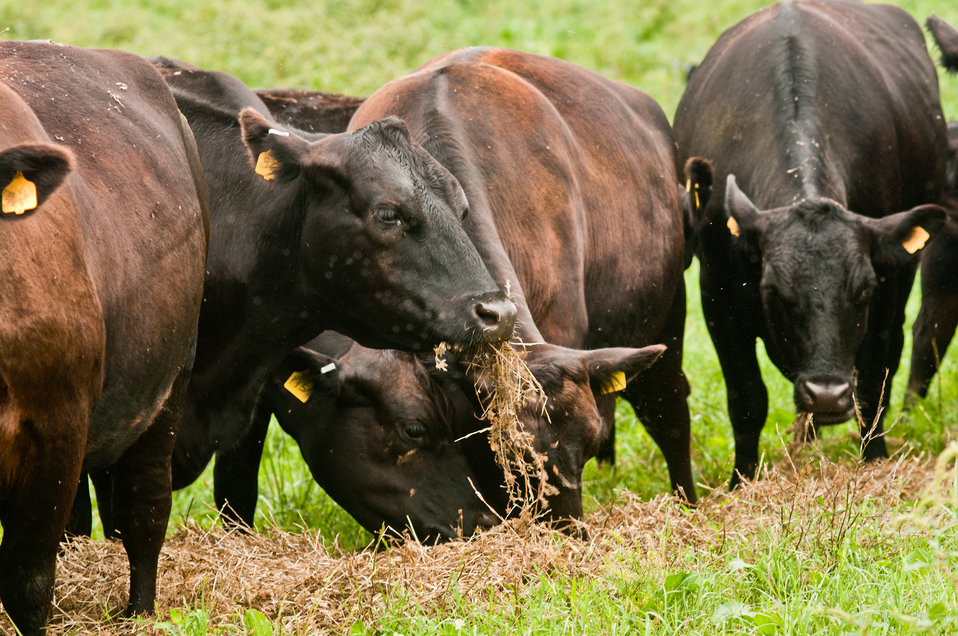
Black Angus cows and calves graze organic pastures, and for added nutrition and variety, they enjoy a daily feeding of sweet silage at Nick’s Organic Farm, owned by Nick Maravell, in Adamstown, MD on Friday, July 12, 2013. The white plastic wrapped bales of pasture grass and alfalfa have been fermenting for months to create sweet silage that stores well and can be used to feed cattle at varying amount all year long. The fermentation process sweetens the taste and increases the vitamin levels. The farm produces Black Angus beef, chicken, turkey, eggs, hay, soybeans, corn, alfalfa, orchard grass, rye; and other crops. The cattle are 100% grass-fed receiving certified organic pasture, certified organic hay (in winter), water and mineral salts mixed with sea kelp. The cattle are not fed hormones, antibiotics or animal products. Poultry feed from grain is ground from organic grain. The poultry also graze on organic pastures. The farm has conducted on-farm research with federal, state and non-profit agencies to refine organic practices. An organization such as the U.S. Department of Agriculture (USDA) Agricultural Research Service (ARS) center in Beltsville has been able to conduct research to improve organic crops and to breed and manage the cattle so that they have.